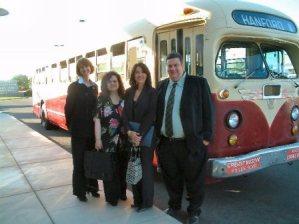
Hanford buses

Outside the Tri-Cities Convention Bureau. Barbeque hosted by TRIDEC (Tri-City Development Council) Aug. 10th, 2009. These buses transported workers to the Hanford Site. The Bus is now located as a permanent Exhibit at the CREHST Museum: 95 Lee Blvd, Richland, WA, 99352.